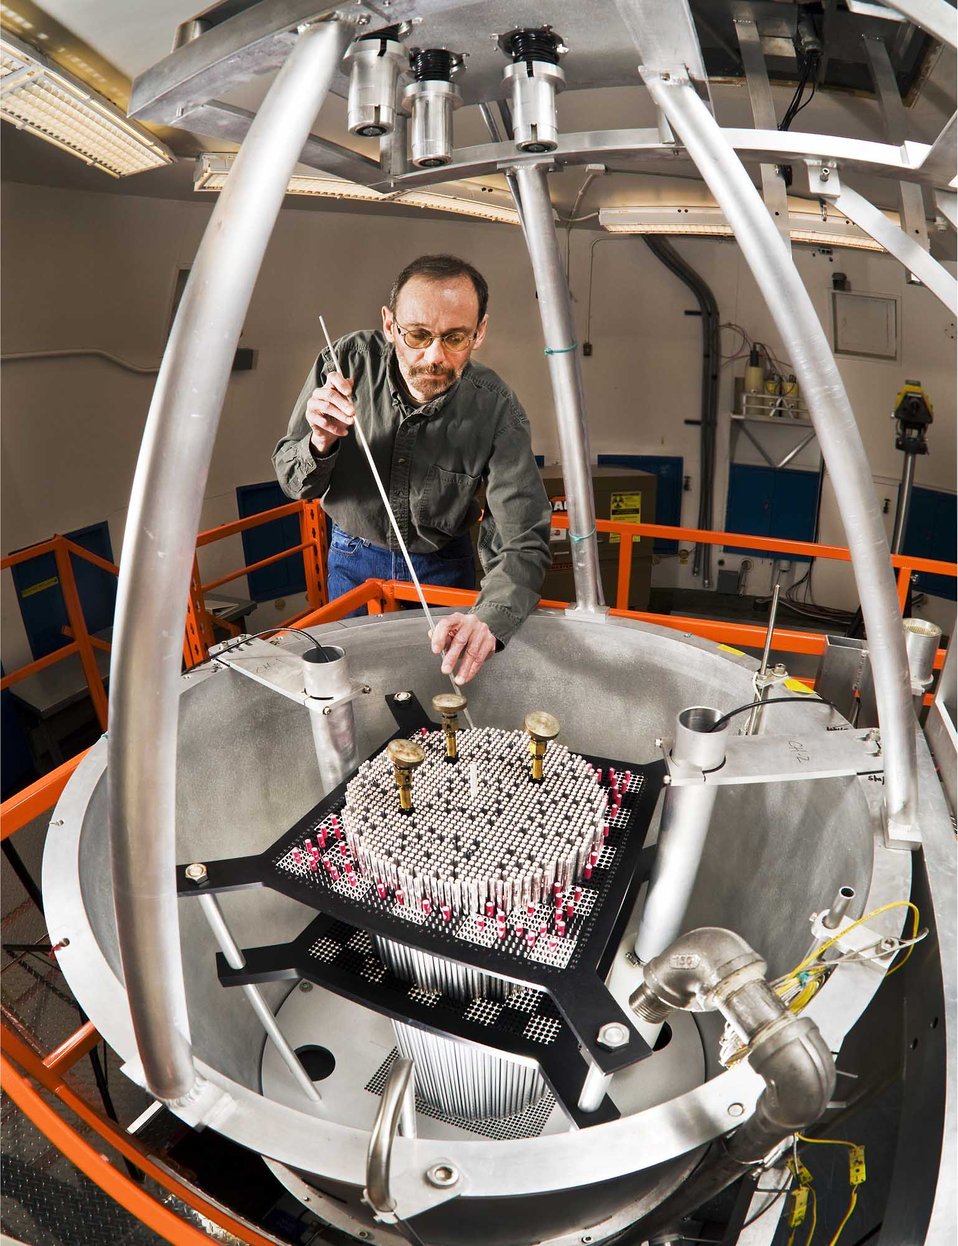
Sandia technician places fuel rods in the Seven Percent Critical Experiment (7uPCX) test reactor- a reactor stripped down to its simplest form. The fuel rod the technician is holding is actually a dummy rod used for practice.